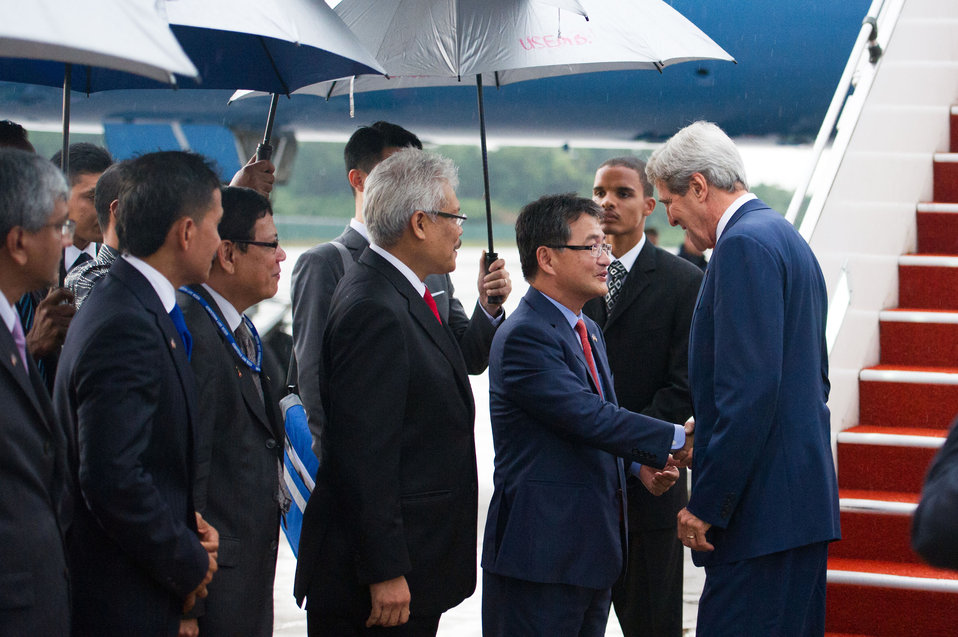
Secretary Kerry is Greeted by Ambassador Yun

U.S. Secretary of State John Kerry arrives in Kuala Lumpur and is greeted by the U.S. Ambassador to Malaysia Joseph Yun on October 10, 2013.